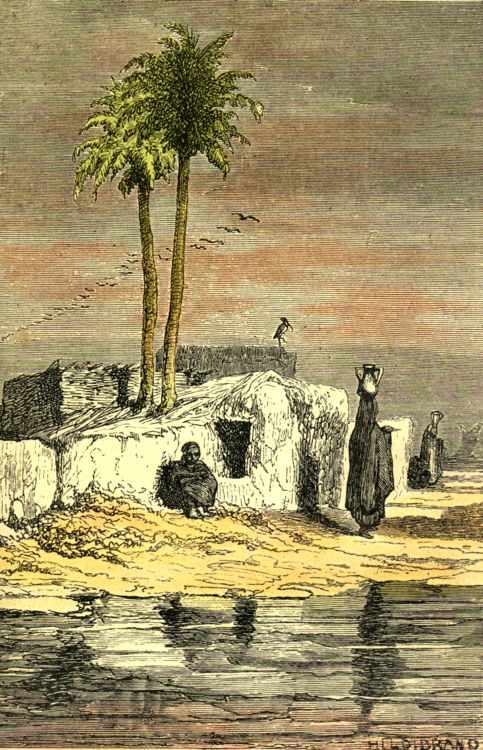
An illustration from Jules Verne's novel 'Twenty Thousand Leagues Under the Sea' (1866-69) drawn by George Roux. Polski: Ilustracja powieści Juliusza Verne'a 'Dwadzieścia tysięcy mil podmorskiej żeglugi' (tytuł przekładany także jako: 'Dwadzieścia tysięcy mil podmorskiej żeglugi około świata', '20.000 mil podmorskiej żeglugi'; 1866-69, I wyd. 1870) autorstwa Alphonse'a de Neuville lub Édouarda Riou. Français : Jules Verne 'Vingt mille lieues sous les mers' (1866-69), dessins par Alphonse de Neuville ou Édouard Riou. Orginal description taken from the book: Français : Quelques cabanes de bois ou de roseaux.